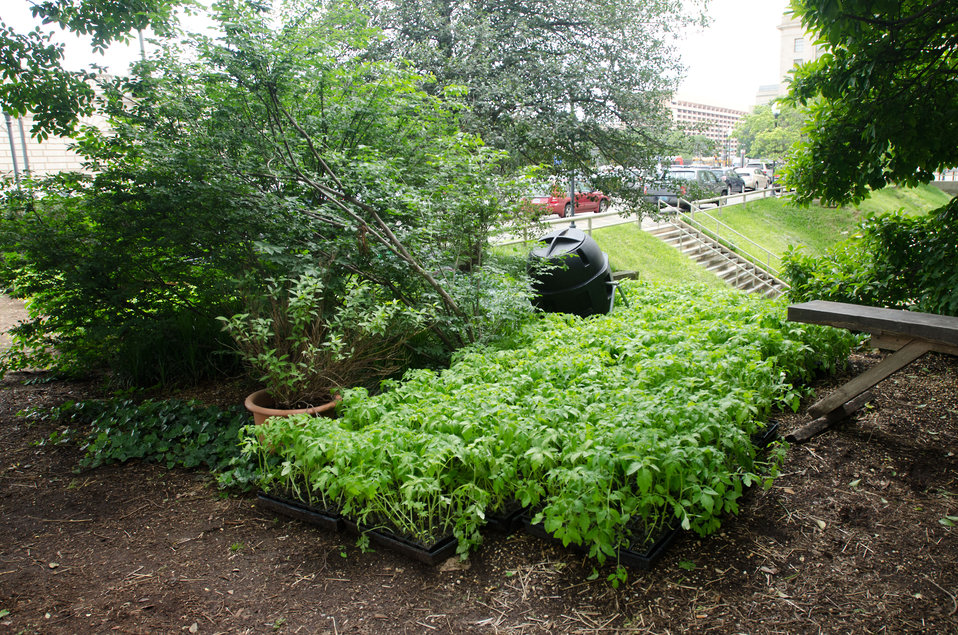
Tomato 'Abraham Lincoln' seedlings waiting for a good home while The People’s Garden Initiative and volunteer Executive Master Gardeners distributed ‘Abraham Lincoln” Tomato seedlings that the People’s Garden Initiative is distributing to USDA employees in celebration of the 150th Anniversary of the U.S. Department of Agriculture, on Tuesday, May 15, 2012 in Washington, D.C., on this day, 150 years ago, President Abraham signed the Department into existence during the Civil War. In 1923 the H.W. Buckbee seed company of Rockford, Illinois introduced an heirloom variety named in honor of Illinois’ Greatest Son – Abraham Lincoln. The plant produces large beefsteak tomatoes in about 90 days. Volunteer Executive Master Gardeners planted and cultivated more that 3,000 seedlings ranging in size from one inch to more than a foot tall, so people could choose the best ones to transport home and to stagger the harvest by selecting a small and large seedling. One of the hopes of this event is to share the joys of gardening and harvesting, as well as the opportunity to share your harvest in your community. Seed packets are being distributed to People’s Gardens worldwide.